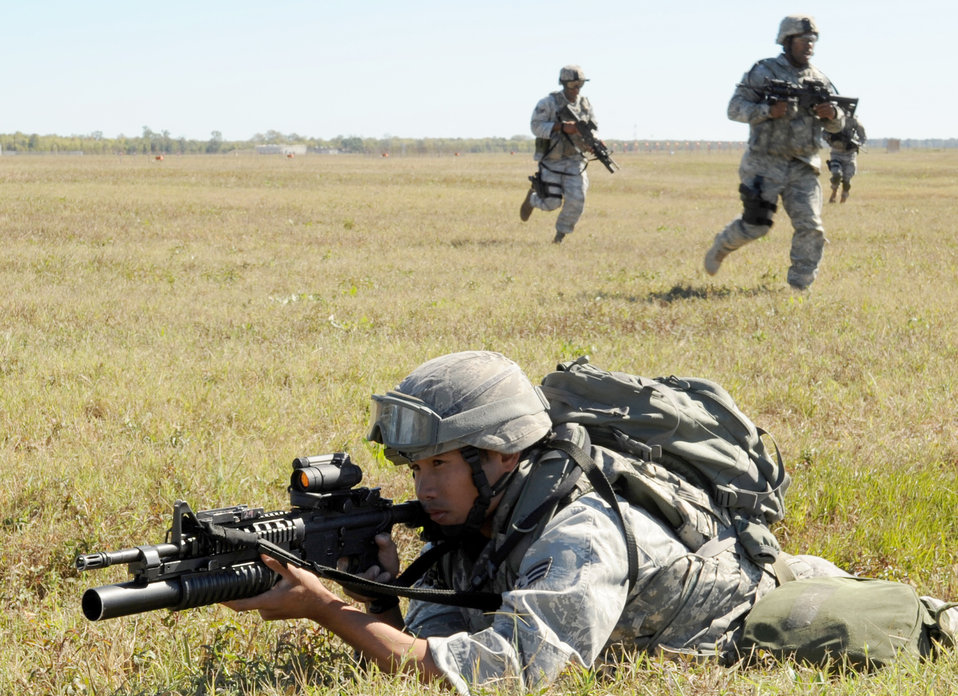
Barksdale Airmen prepare for Global Strike Challenge

Senior Airman Lamar Sjouke takes aim at a target during a training exercise for the Global Strike Challenge competition Nov. 4, 2010, at Barksdale Air Force Base, La. He is with the 2nd Security Forces Squadron.